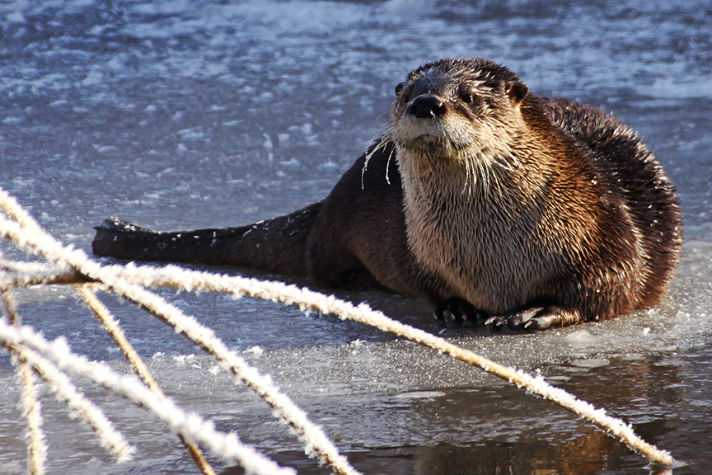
River otter in the winter at Moosehorn National Wildlife Refuge.